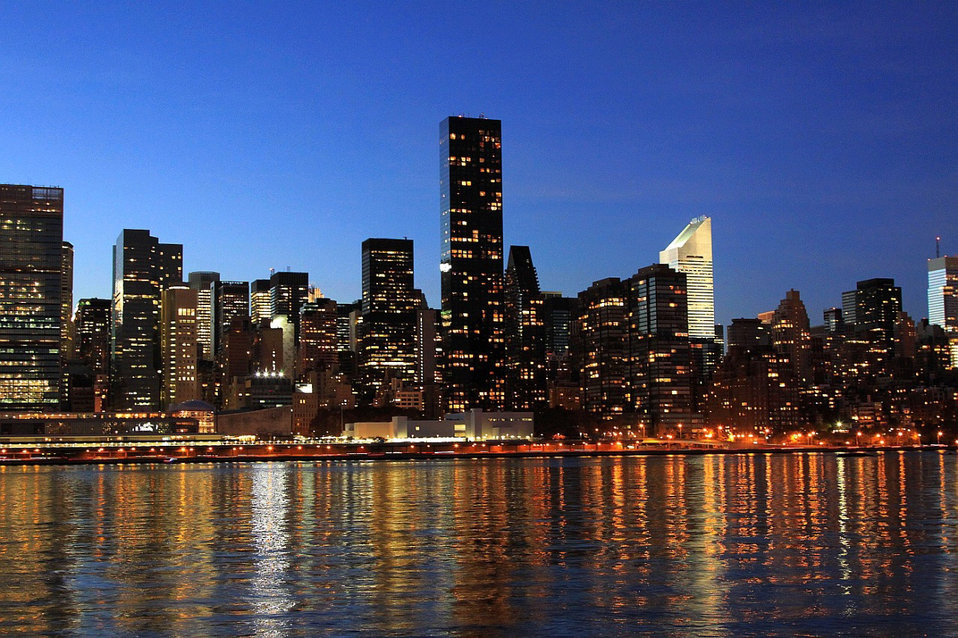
Night in the city

Midtown skyline from queens side after sunset.